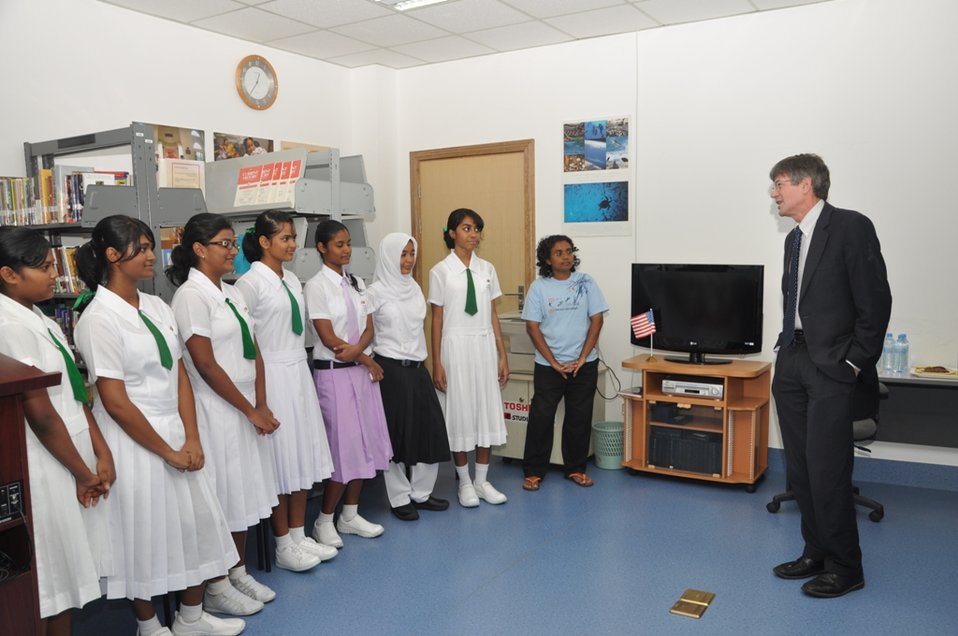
Deputy Secretary Steinberg Speaks With a Maldivian Girls Soccer Team

U.S. Deputy Secretary of State James Steinberg speaks with a Maldivian girls soccer team that recently visited the United States in Male, Maldives, on January 29, 2011.